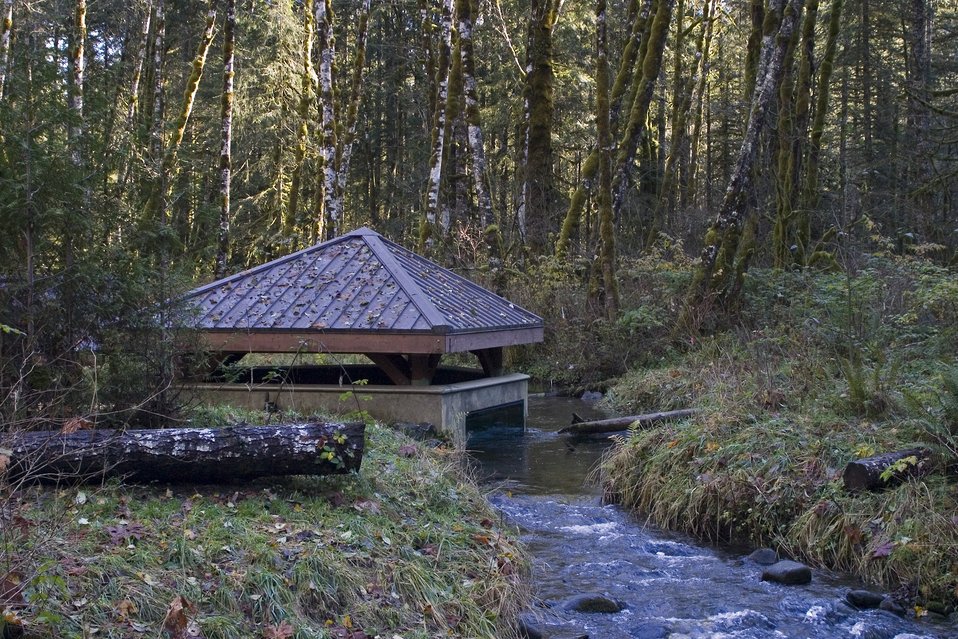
This structure at Wildwood Rrecreation Area near Mt. Hood lets visitors look below the surface of the creek water to observe fish and other aquatic life